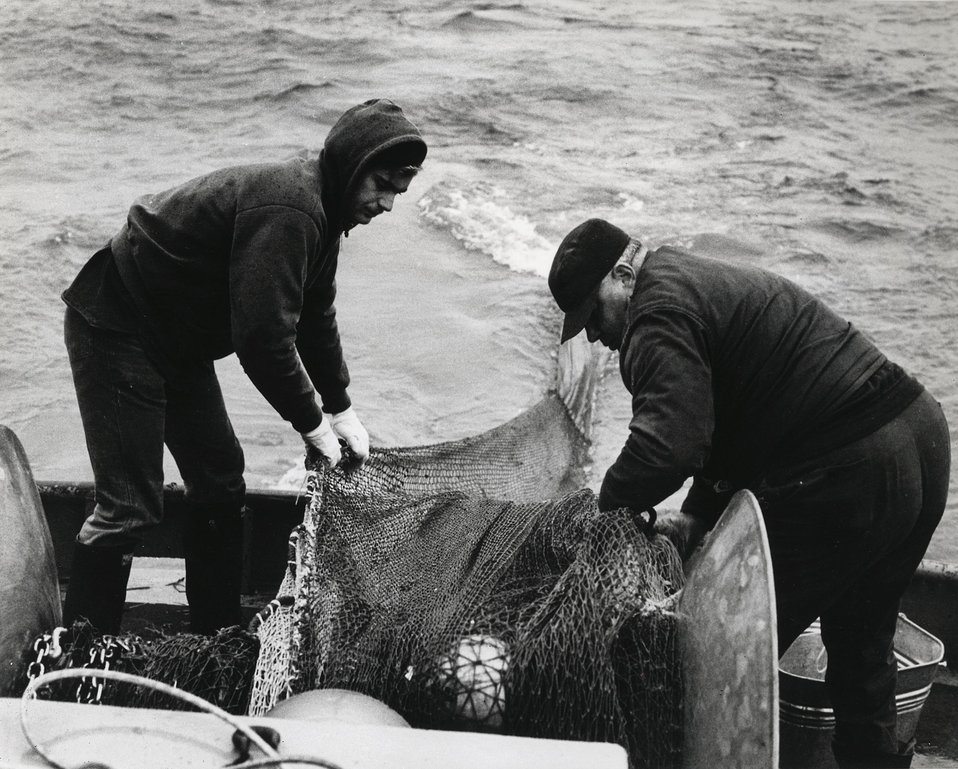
Crewmen aboard the US Bureau of Fisheries boat 'Cisco' winch in a trawl net from the icy waters of Lake Michigan.